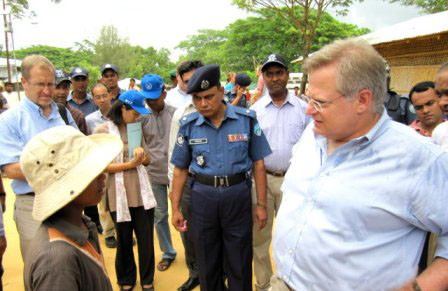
Assistant Secretary Schwartz Speaks With a Rohingya Boy

Assistant Secretary of State for Population, Refugees and Migration Eric Schwartz speaks with a Rohingya boy in Cox's Bazar District, Bangladesh, on June 7, 2011.